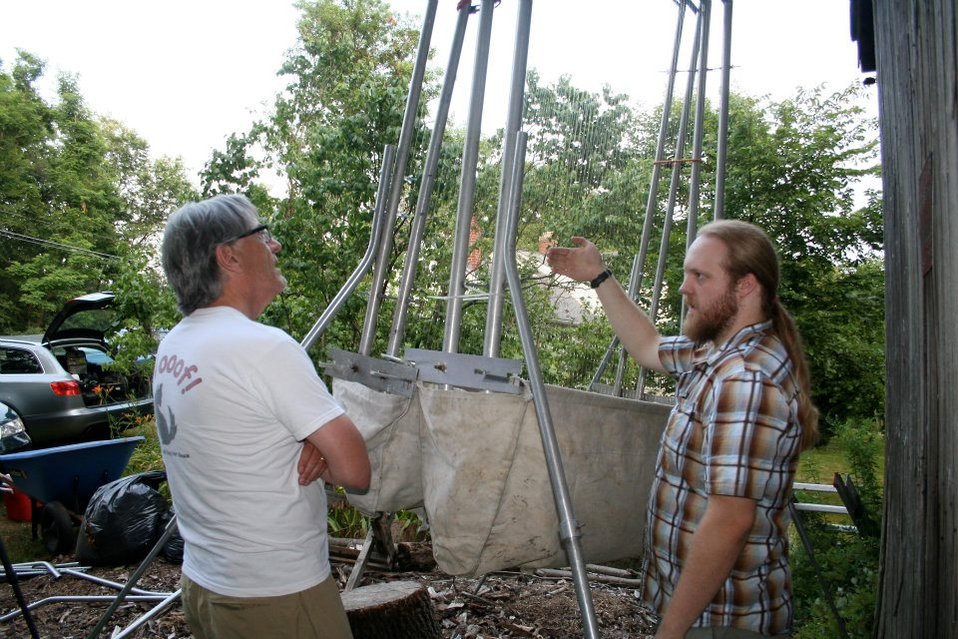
NYT science writer Jim Gorman talks to BU researcher Nate Fuller